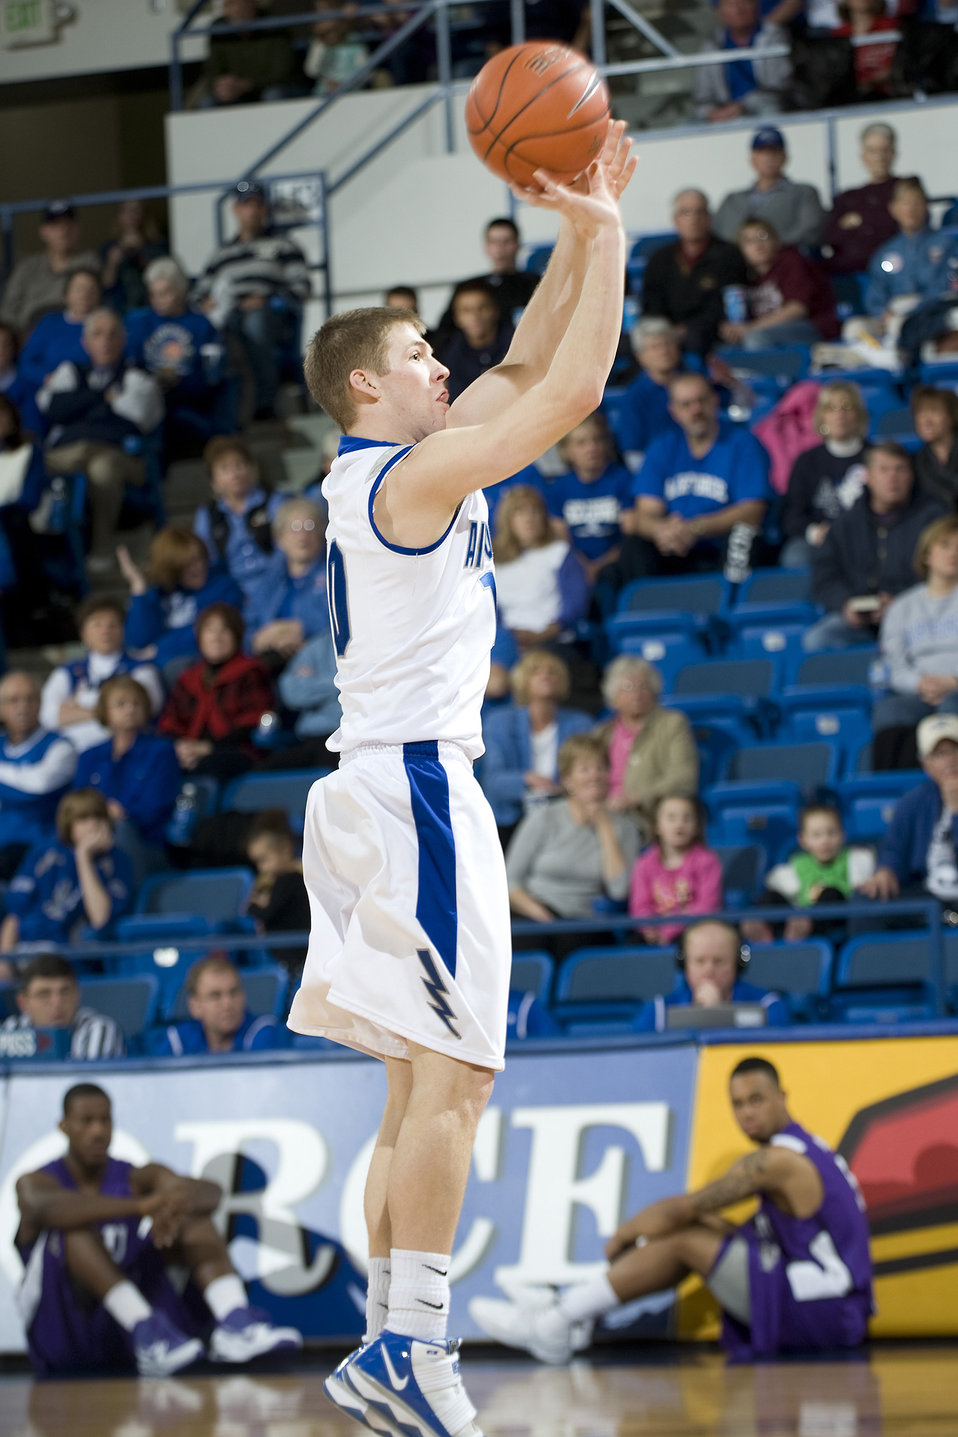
Horned Frogs surpass Falcons

Air Force Academy freshman guard Todd Fletcher attempts a 3-pointer against Texas Christian University Feb. 6, 2010, at the Academy's Clune Arena. Fletcher was 2 for 3 from behind the arc however the Falcons fell short of their goal, losing to TCU by a score of 65-51.